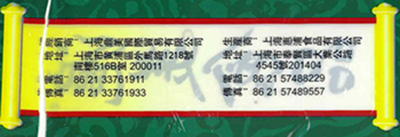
RECALLED – Dried Lily

February 4, 2014 – Product Recall – Humei Trading Inc. Issues Alert on Undeclared Sulfites in 'Dried Lily' .